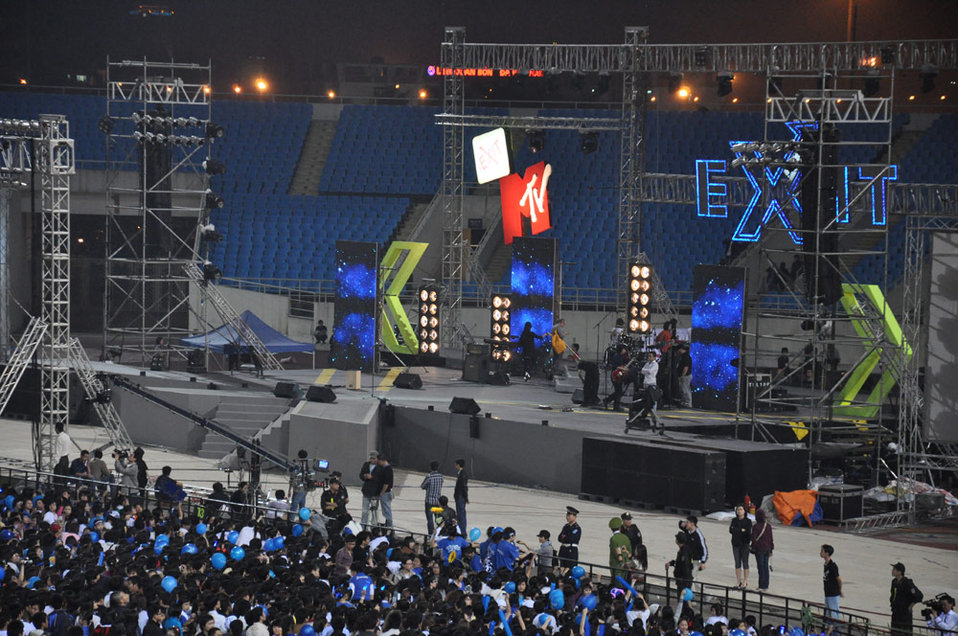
USAID Vietnam and MTVEXIT against Human Trafficking

Hanoi concert, March 27, 2010